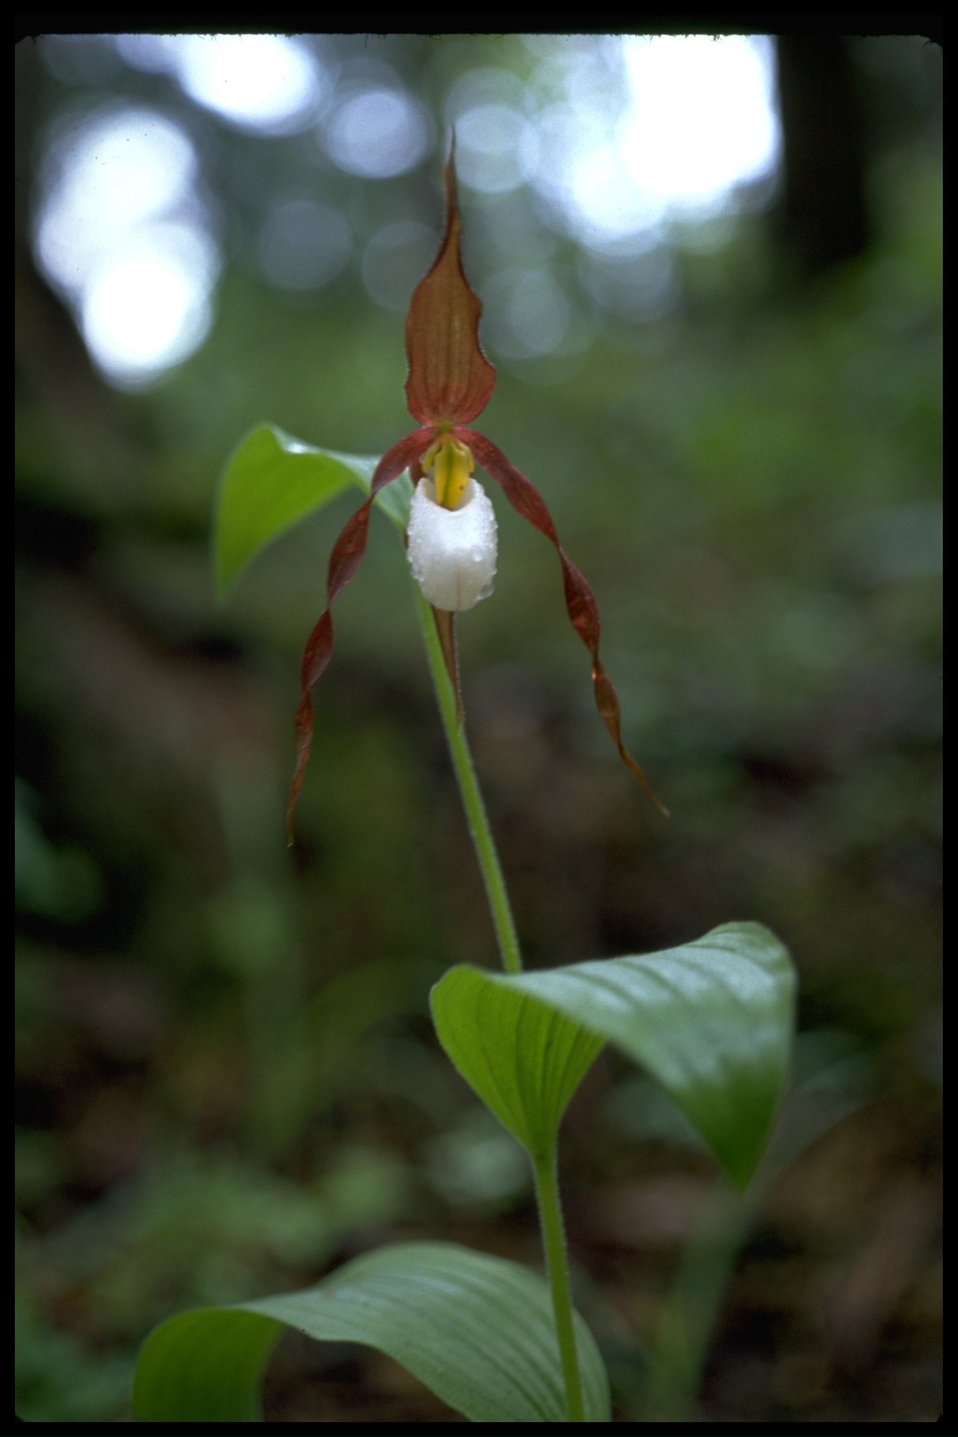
Cypripedium montanum, commonly known as Mountain Lady's Slipper.